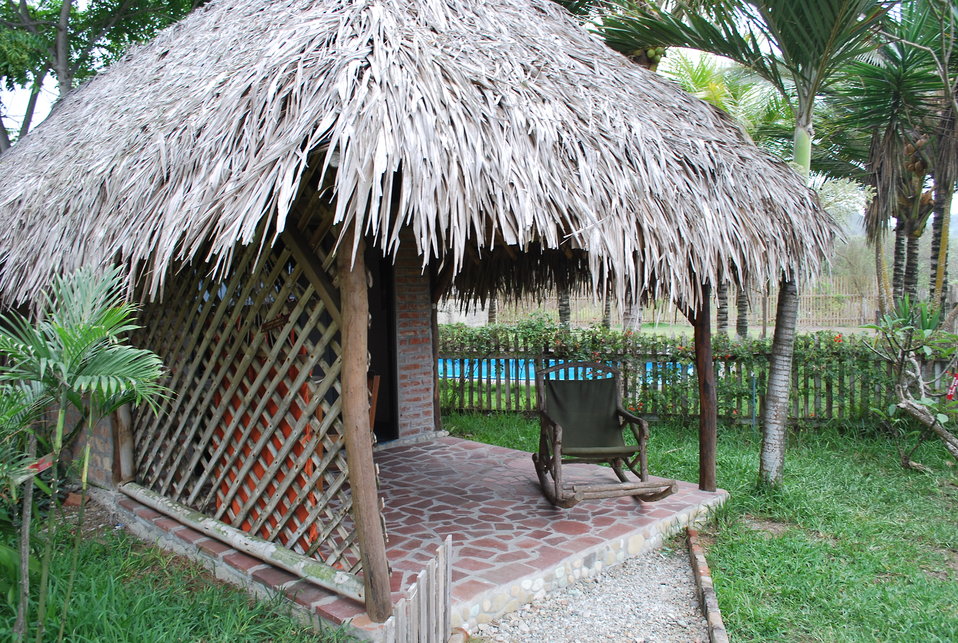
[Cabana (structure)] in Ayampe